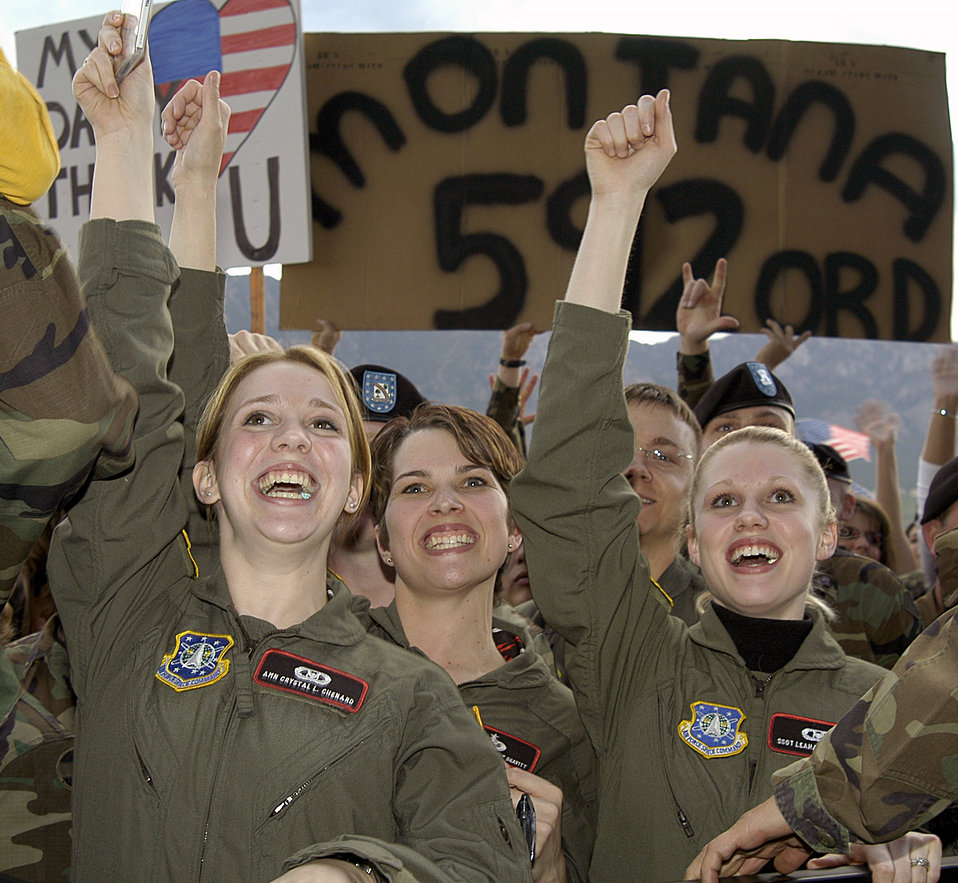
We love Tim

FORT CARSON, Colo. (AFPN) -- Left to right: Airman Crystal Chenard and Staff Sgts. Christy Gravitt and Leahanna Neas, all from the 21st Space Wing Operations Center at Peterson Air Force Base, Colo., cheer during a free concert for military and family members here May 21. He put on the free concert to show appreciation for the military.